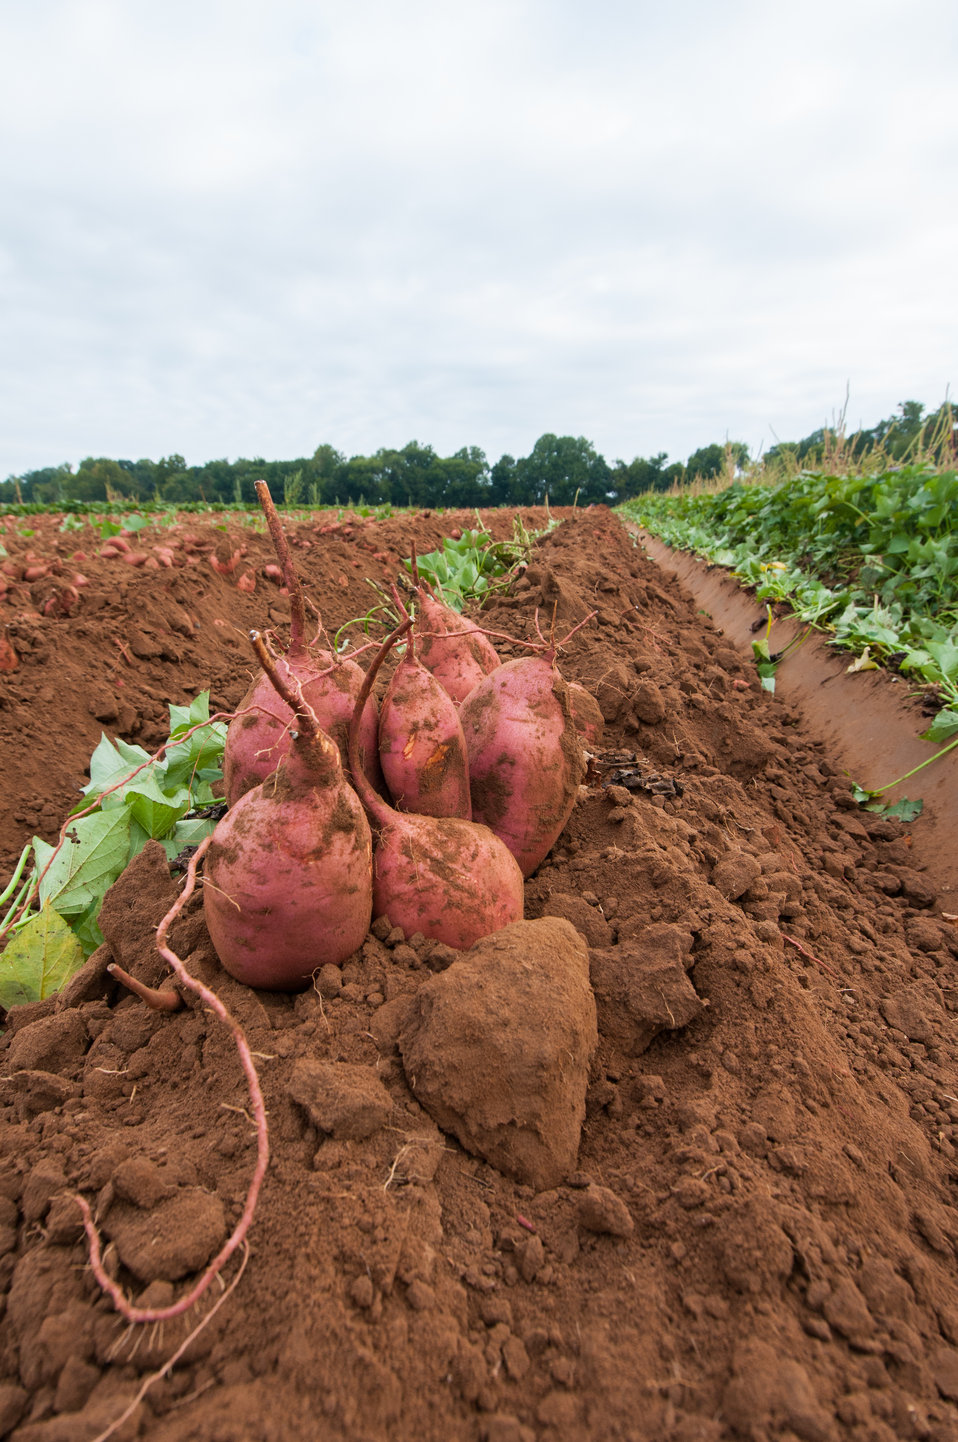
The sweet potatoes harvest begins by plowing them up at Kirby Farms in Mechanicsville, VA on Sept. 20, 2013. They devote 200 acres of the farm to eggplant, spinach, beets, tomato, jalapeno peppers, melons and a variety of greens. Soybeans and small grain are grown on the remaining 300 acres. The fertile Virginia soil and their management practices, allows Kirby Farms to double and triple crop fields with rotational crop selection. Wholesalers, who buy from this farm, sell the produce to major supermarkets in the Mid-Atlantic region, from North Carolina to Maryland. Restaurateurs in the local area prepare and serve their harvest to patrons in the Greater Richmond Region.